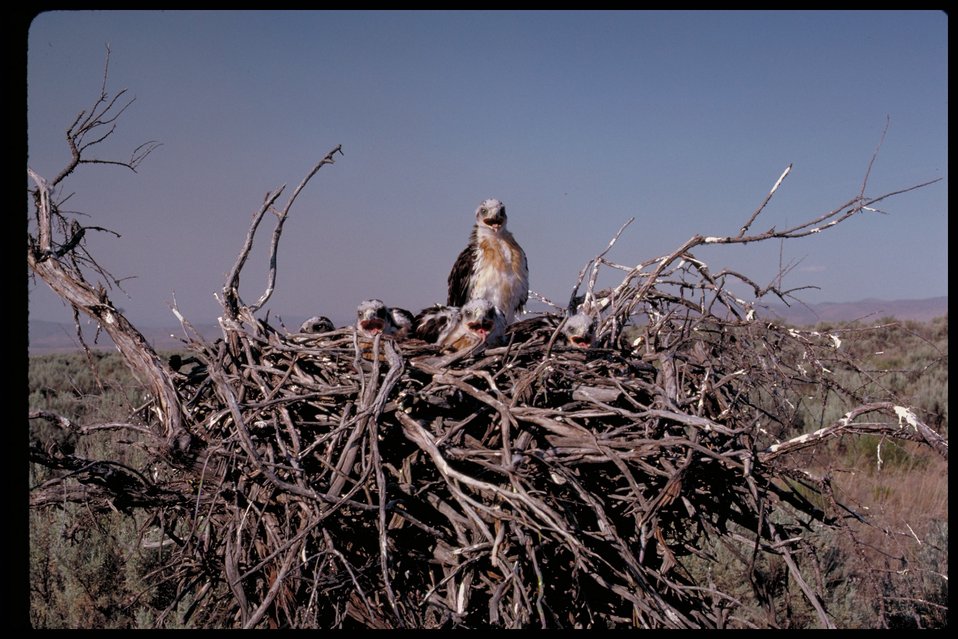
Ferrugenous Hawk Birds of Prey National Conservation Area BOP Owyhee Field Office LSRD Lower Snake River District